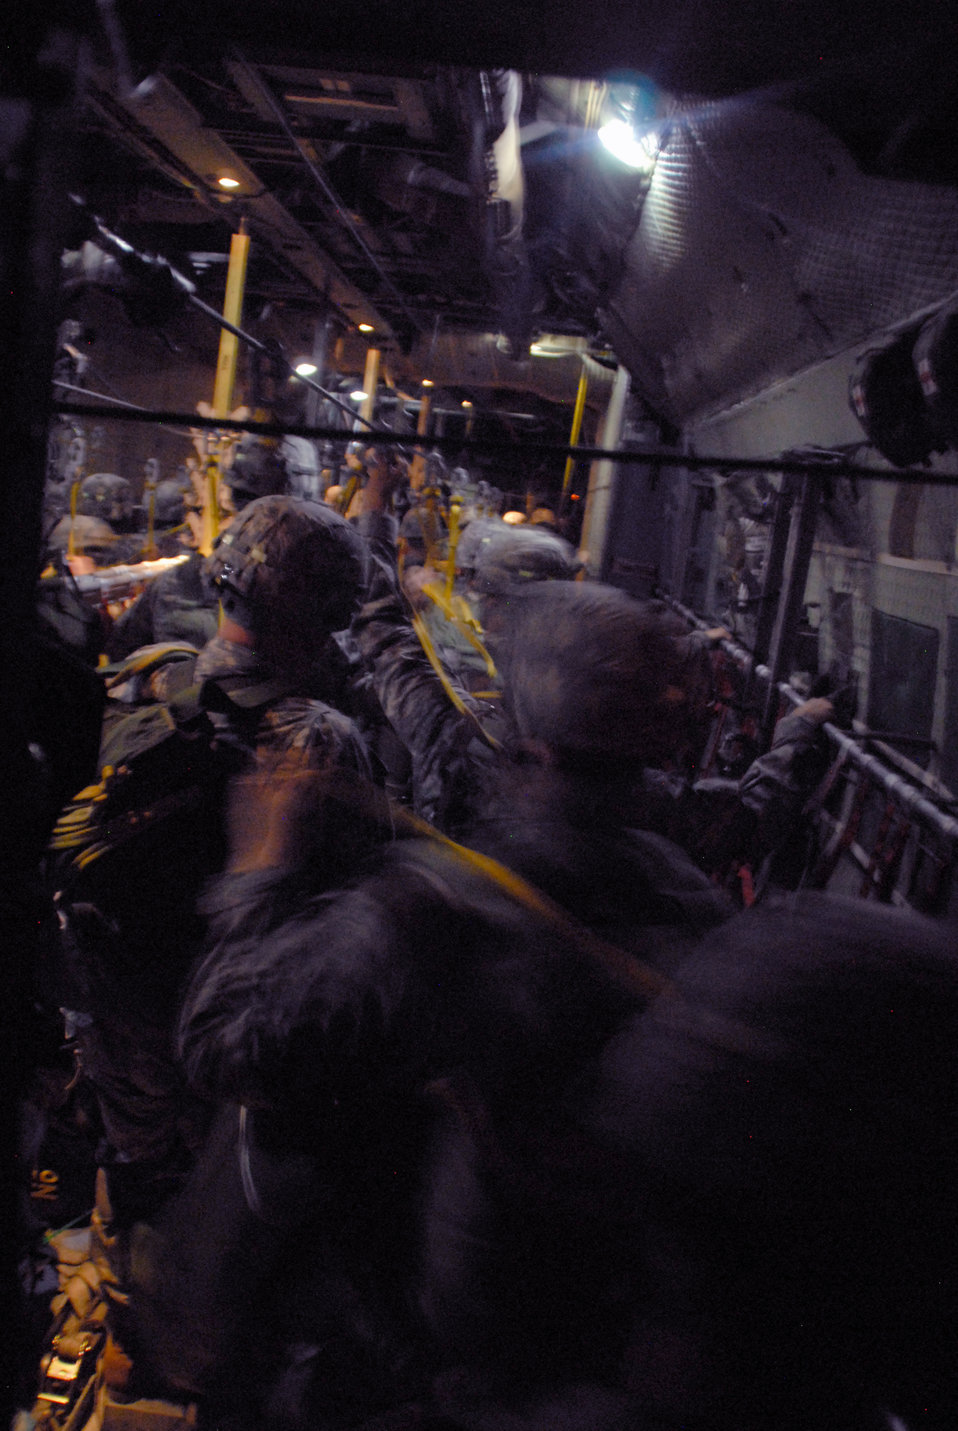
Four Little Rock aircrews take part in largest joint exercise formation

Army paratroopers from the 82nd Airborne Division, Fort Bragg, N.C., jump out of a C-130E Hercules June 22, 2010 during the first night of an 18-ship formation of C-130s and C-17 Globemaster IIIs that airdropped 1,117 paratroopers along with cargo.